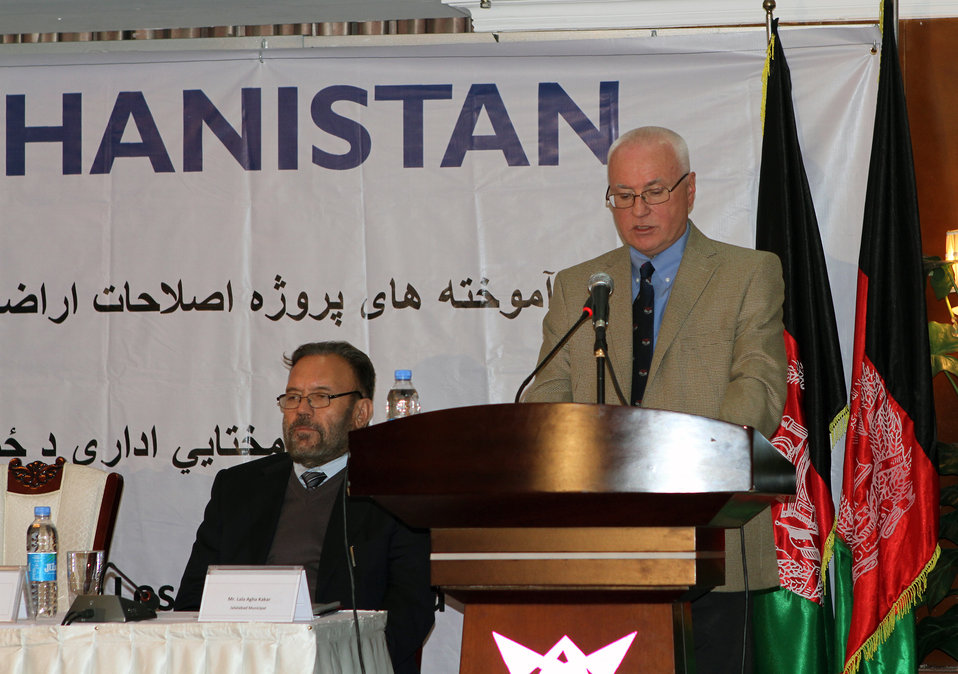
USAID Land Reform Project